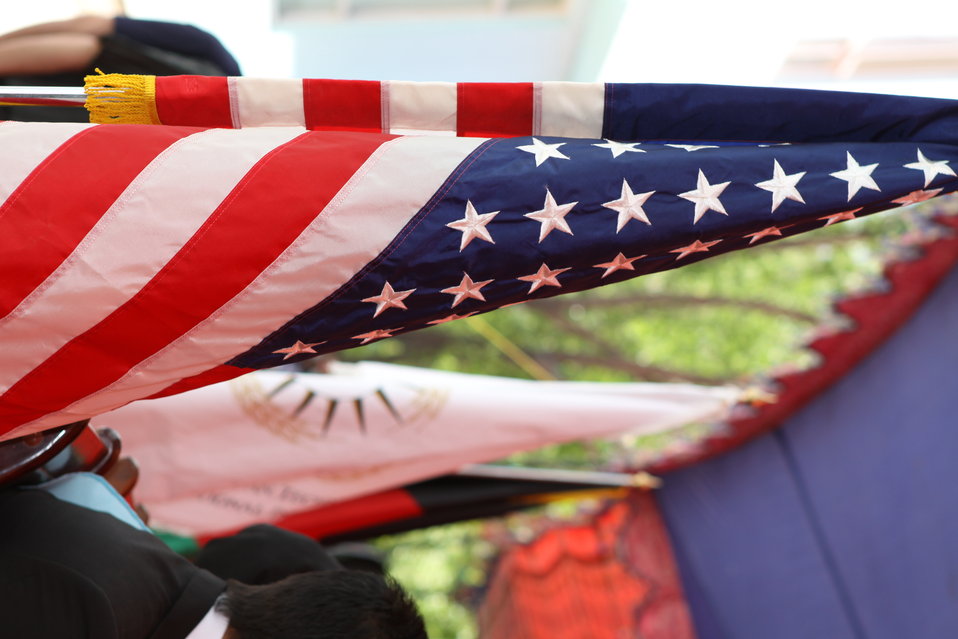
100522 ATVI Graduation 090